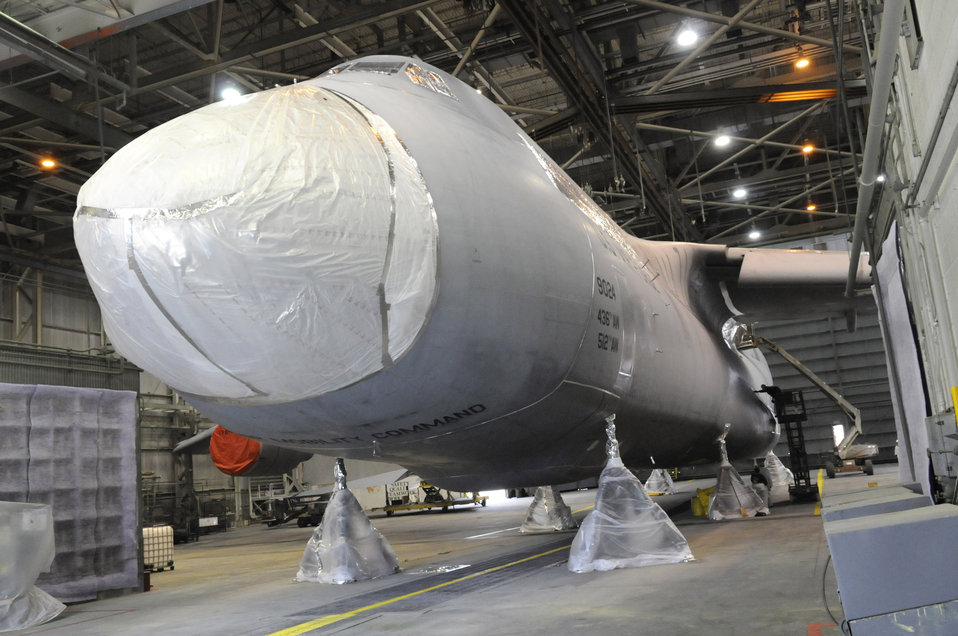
C-5M Galaxy

A C-5 Galaxy sits in a depaint hangar at the Lockheed Martin facility in Marietta, Ga., where workers have masked the seams, composite areas and antennas in order to spray on stripper to remove the paint from the aircraft. C-5s are undergoing Avionics Modernization Program and Reliability Enhancement and Re-engining Program upgrades, modifying them to C-5M Super Galaxys.